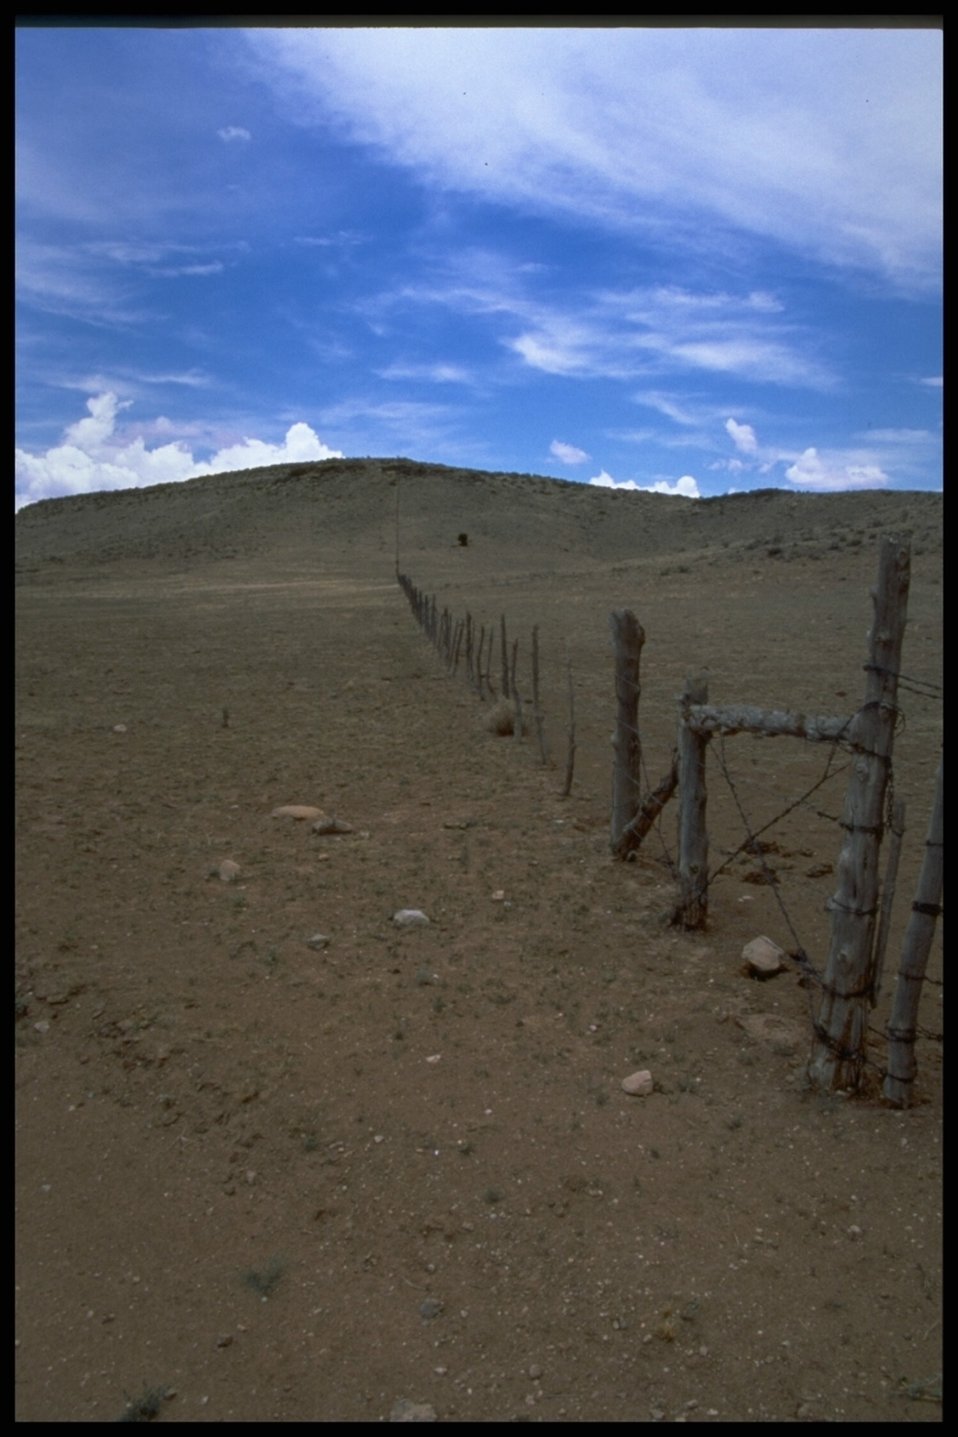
Dirt road leading into the horizen of the blue sky at the Parashant National Monument.